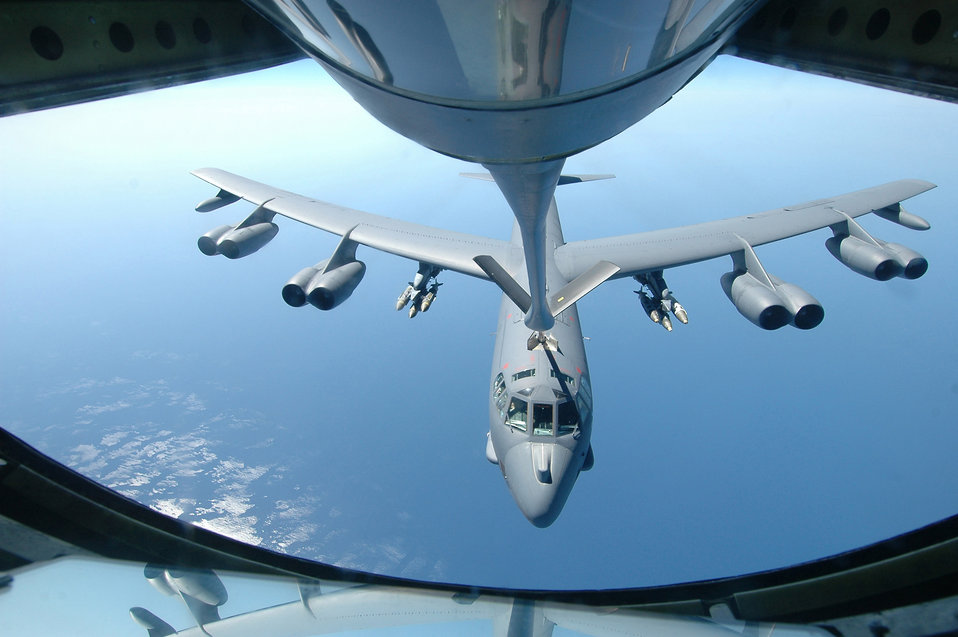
Fueling the fight

A KC-135 Stratotanker refuels a B-52 Stratofortress over the Indian Ocean. The two aircraft are from a forward deployed location supporting Operation Enduring Freedom. The B-52 provides close air support to troops on the ground in Afghanistan.